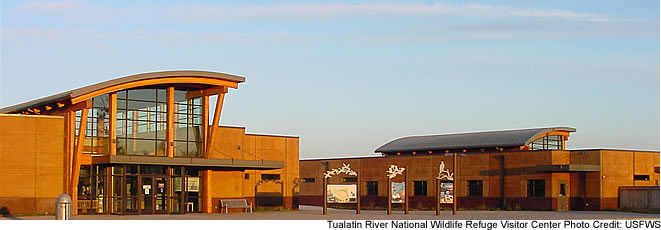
Visitor center - Tualatin River NWR

The Refuge's new Wildlife Center offers visitors the chance to explore new exhibits, visit the non-profit nature and, indoor and outdoor viewing areas.